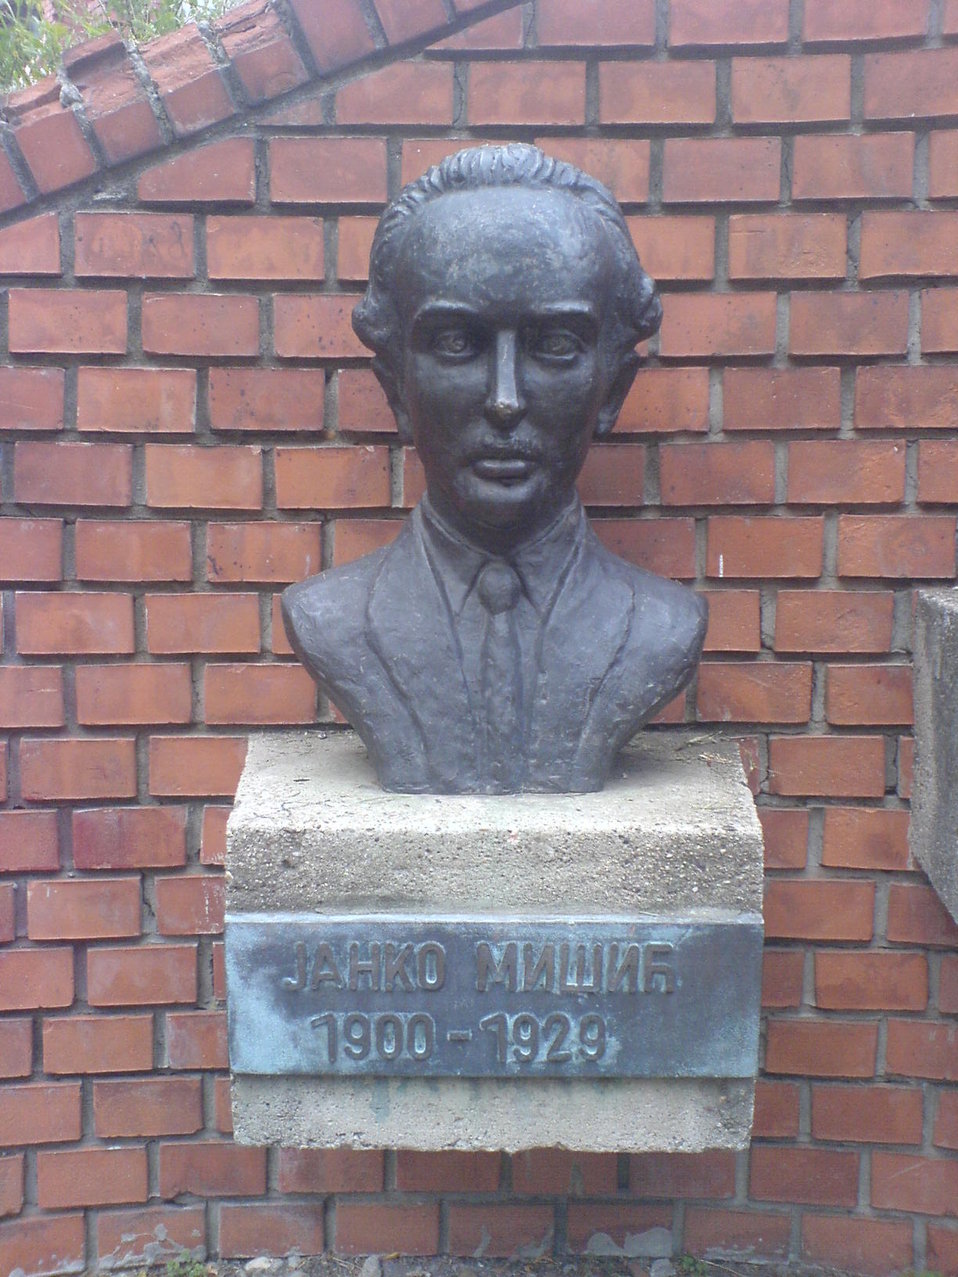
Српски / srpski: Биста Јанка Мишића (1900-1929), једног од седморице секретара СКОЈ, у дворишту ОШ 'Седам секретара СКОЈ-а' на Новом Београду.